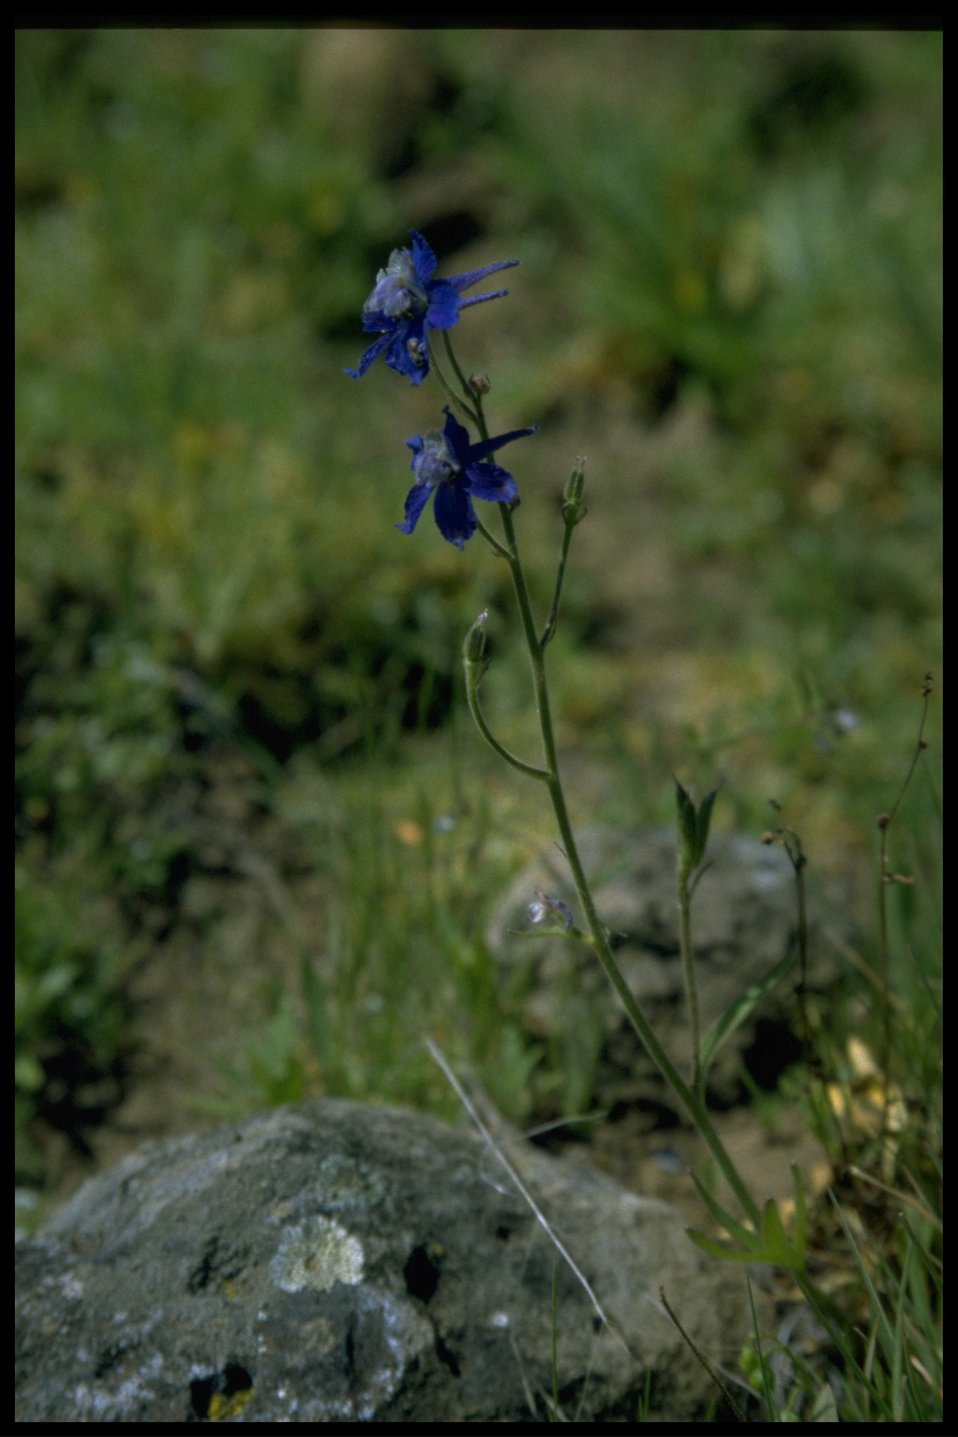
Medium shot of Larkspur wildflower and fruit.